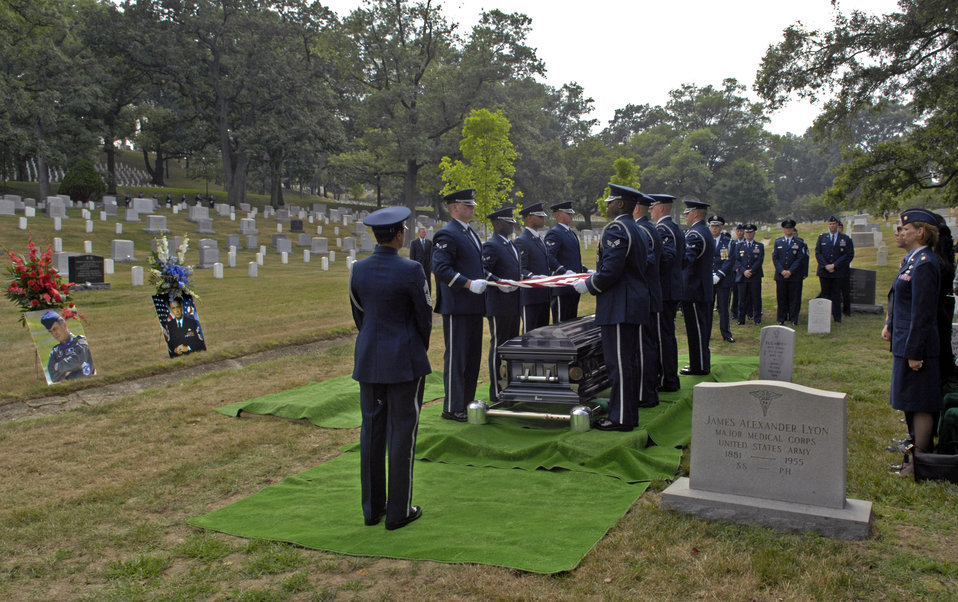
Chief Pfingston laid to rest at Arlington

Air Force Honor Guard pallbearers hold the United States flag over coffin of the late Chief Master Sergeant of the Air Force Gary R. Pfingston at his burial site July 6 at Arlington National Cemetery, Va. The 10th CMSAF was born in Evansville, Ind., and entered the Air Force in February 1962. He passed away June 23 in San Antonio.